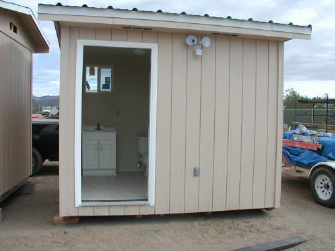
ddftmpMEMAOGMMtkkkkkkk--------

The U.S. Department of Agriculture’s (USDA) Rural Development (RD) agency assisted in the construction of modular bathrooms that were added to homes on the Tohono O’odham Nation in southern Arizona on Nov. 1, 2012. Homes on the reservation were built years ago without indoor plumbing and the hope of adding sanitary facilities was stymied by the lack of access to treatment facilities. USDA RD has provided aid to Colonias in Arizona, California, New Mexico, and Texas. Colonias are neighborhoods or communities within 150 miles of the U.S./Mexico border that are economically distressed.